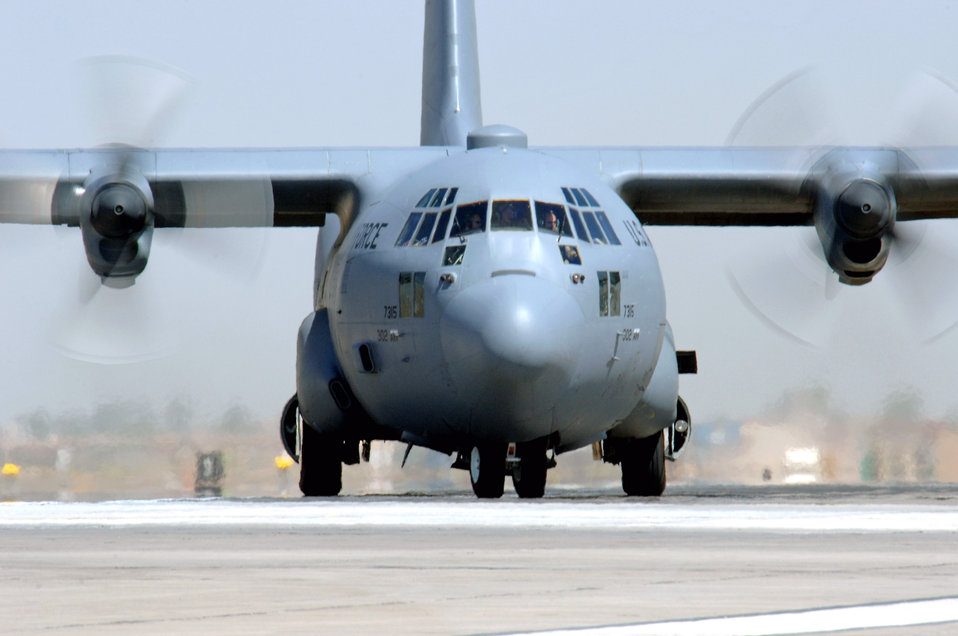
Aug. 5 airpower summary: C-130s transport troop supplies

A C-130 Hercules taxis in after an Operation Iraqi Freedom mission at Joint Base Balad, Iraq. The C-130 is deployed from the 439th Airlift Wing Air National Guard, Colorado Springs, CO.